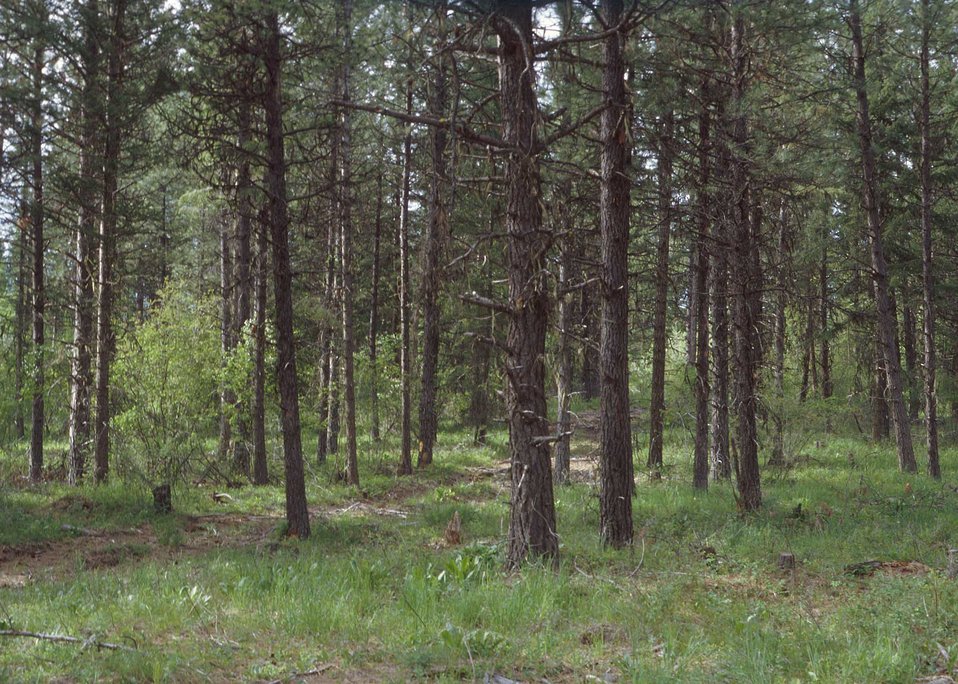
Forest stand improvement involves cutting or killing selected trees and understory vegetation to improve tree stands.